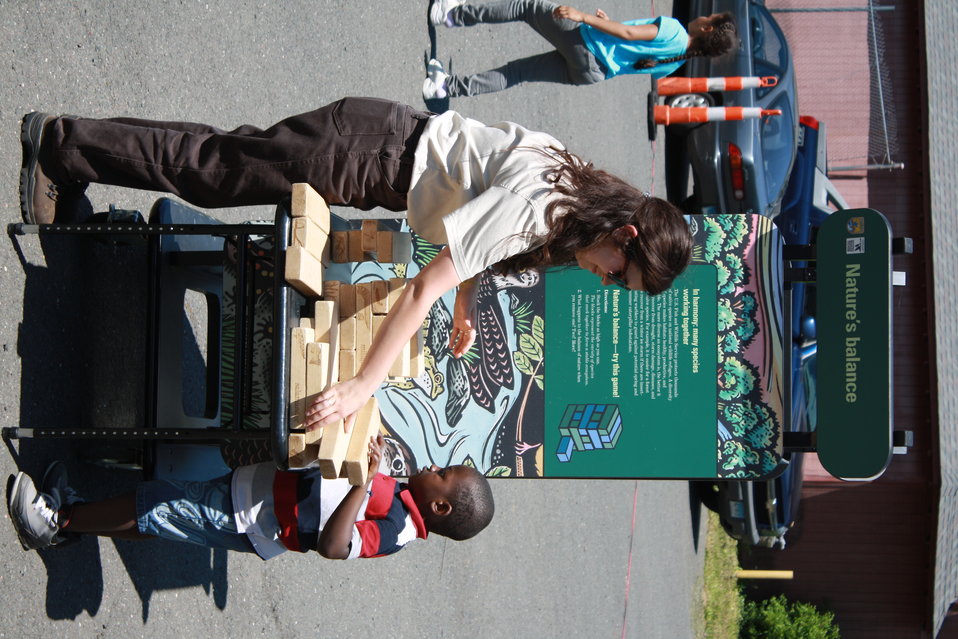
Refuge Employee and Child

WOW Express at Keney Park in Hartford, Conn.